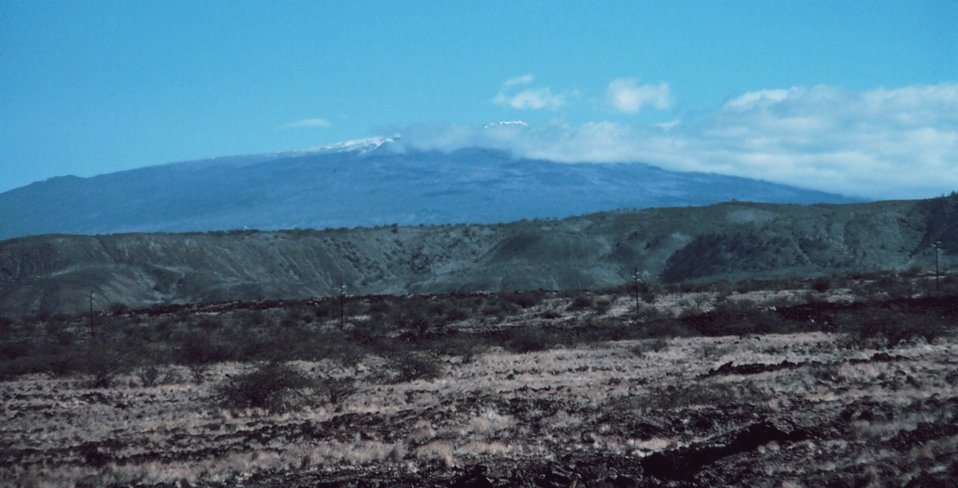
Mauna Kea as seen from the Kona Coast